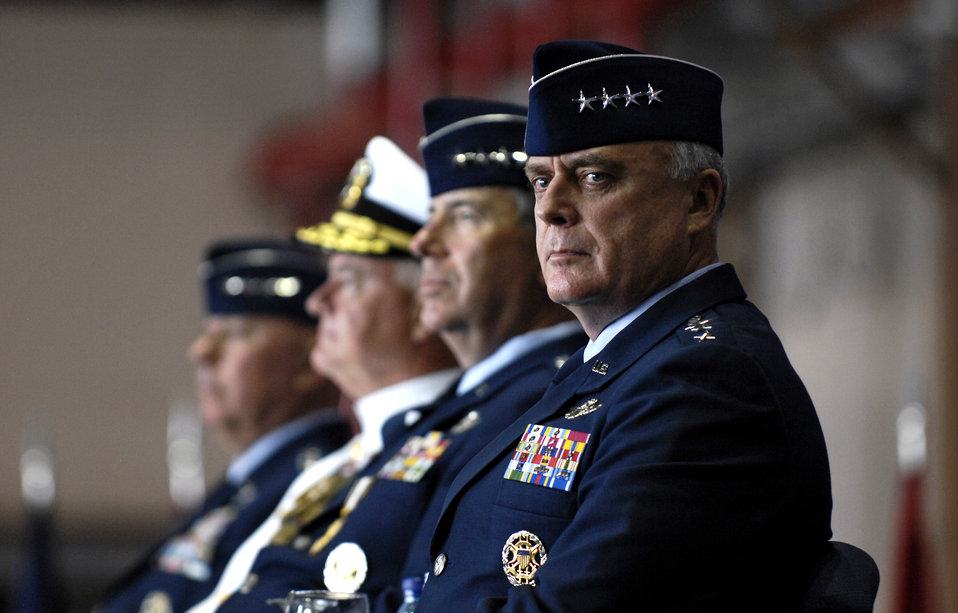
General Chandler takes command

Gen. Carrol H. Chandler listens to the master of ceremonies Nov. 30 during his change of command ceremony at Hickam Air Force Base, Hawaii. Gen. T. Michael Moseley, Chief of Staff, U.S. Air Force and Adm. Timothy J. Keating, Commander U.S. Pacific Command presided over the change of command. Gen. Chandler assumed command of Pacific Air Forces from Gen. Paul V. Hester during the ceremony.